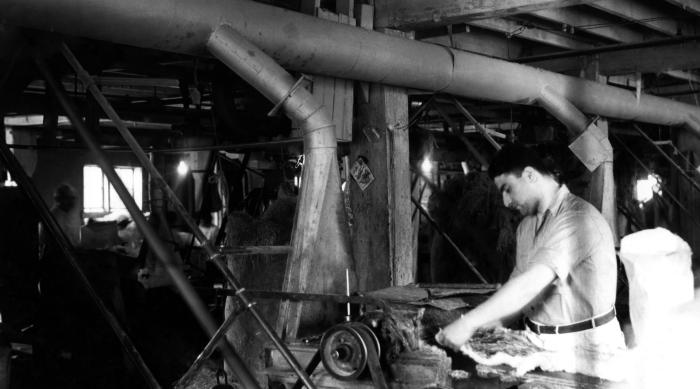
This historical image was provided by the Center for Disease Control's (CDC), National Institute for Occupational Safety and Health (NIOSH). The photograph depicted an industrial fur worker in the process of shaving the 'carroted' fur from an unidentified animal pelt in a Connecticut fur processing plant. Carroting is the process of treating 'hatters'' fur with mercury nitrate, thereby, rendering the fur suitable for manufacturing hats. Note that this worker was not wearing any protective gear at all, including gloves, filtered breathing mask, or goggles. It cannot be determined from this image as to whether or not these accessories were necessary, however, being that carroting involves the use of mercury, which is a poisonous heavy metal, wearing gloves would probably have helped in protecting this man from mercury poisoning.